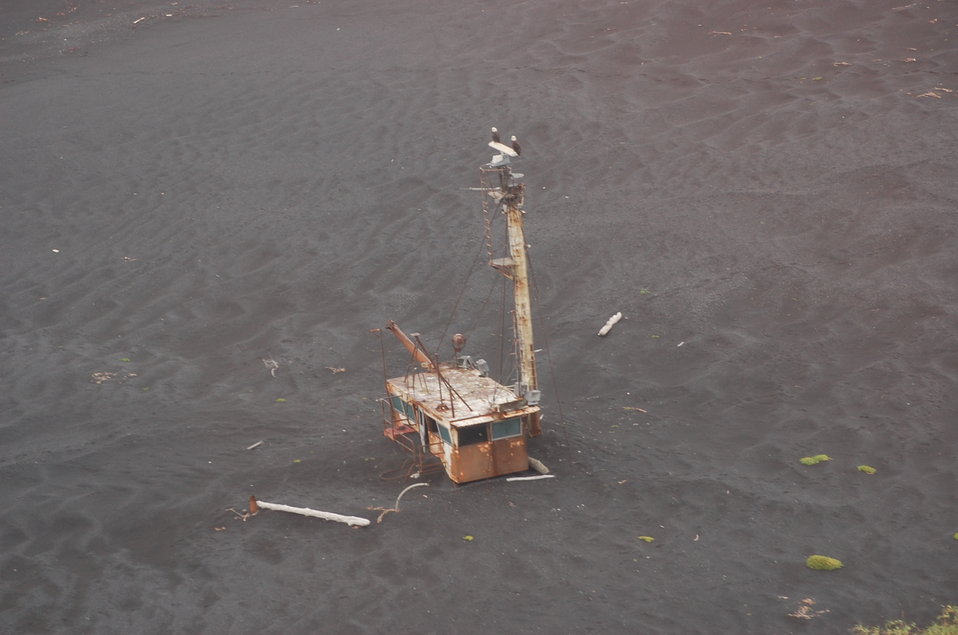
Bald Eagles

Eagles find a perch on a shipwreck, south Unimak Island, Alaska Maritime National Wildlife Refuge